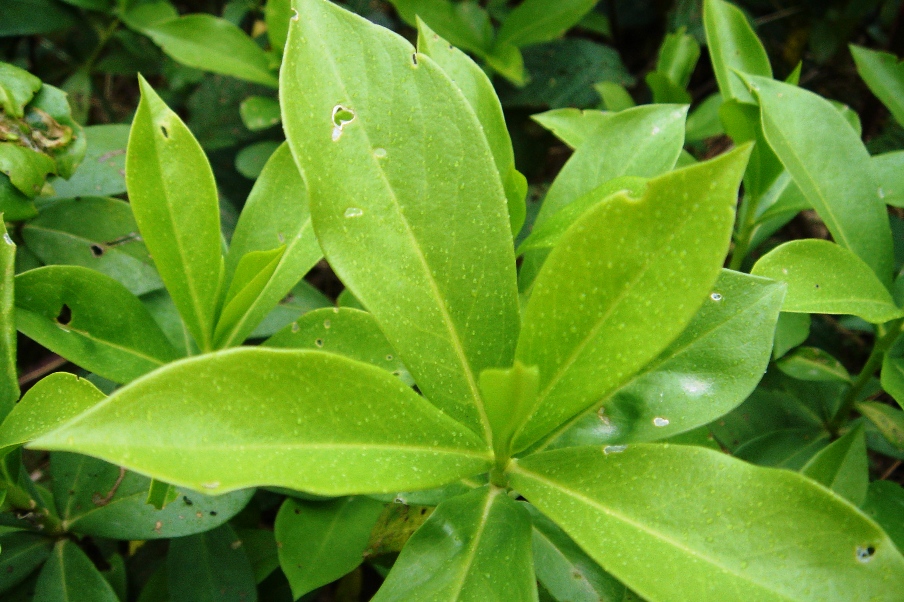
Daphne pontica